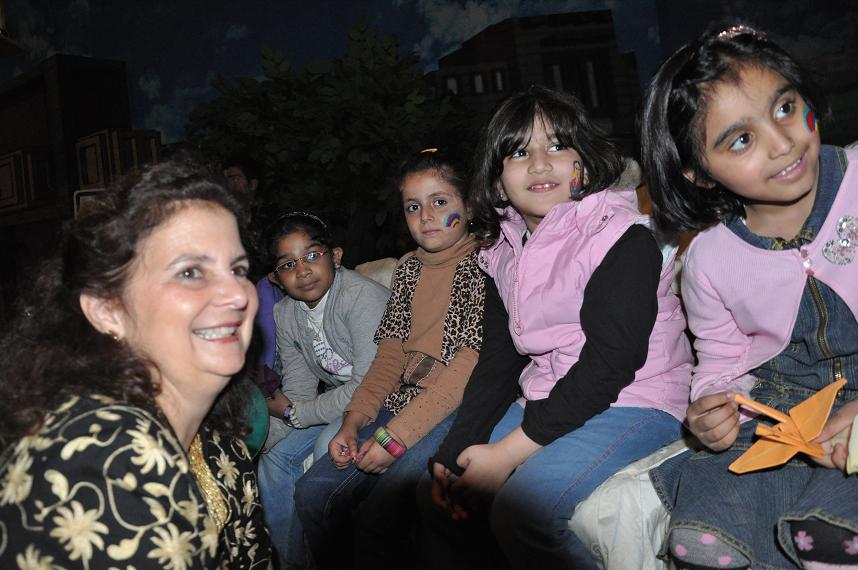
U.S. Consul General Nina Fite with kids.